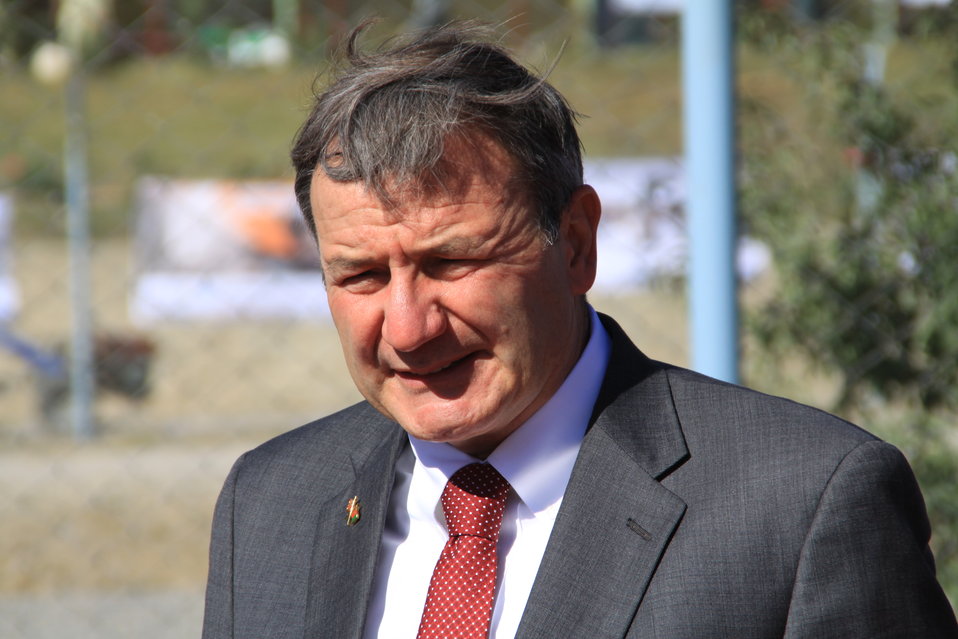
AVIPA Plus Wheat Seed Distribution 101005

US Ambassador Karl Eikenberry and USAID Acting Mission Director Kevin Brownawell joined the Minister of Agriculture, Irrigation and Livestock, H.E. Minister Mohammed Rahimi in signing a Memorandum of Understanding and distributing vouchers to area farmers for wheat and fertilizer.